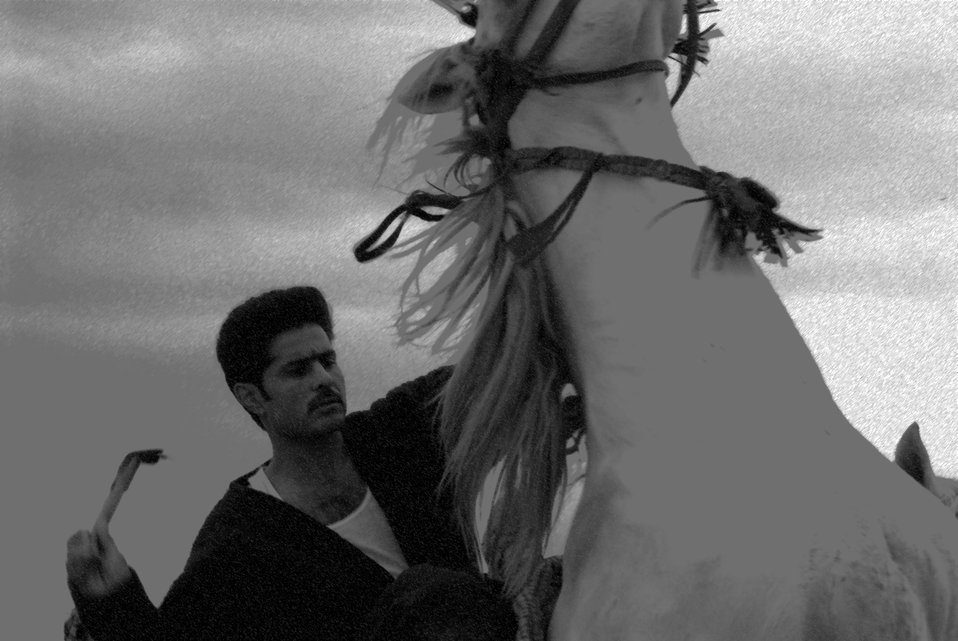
'On the Road' in Balkh Province